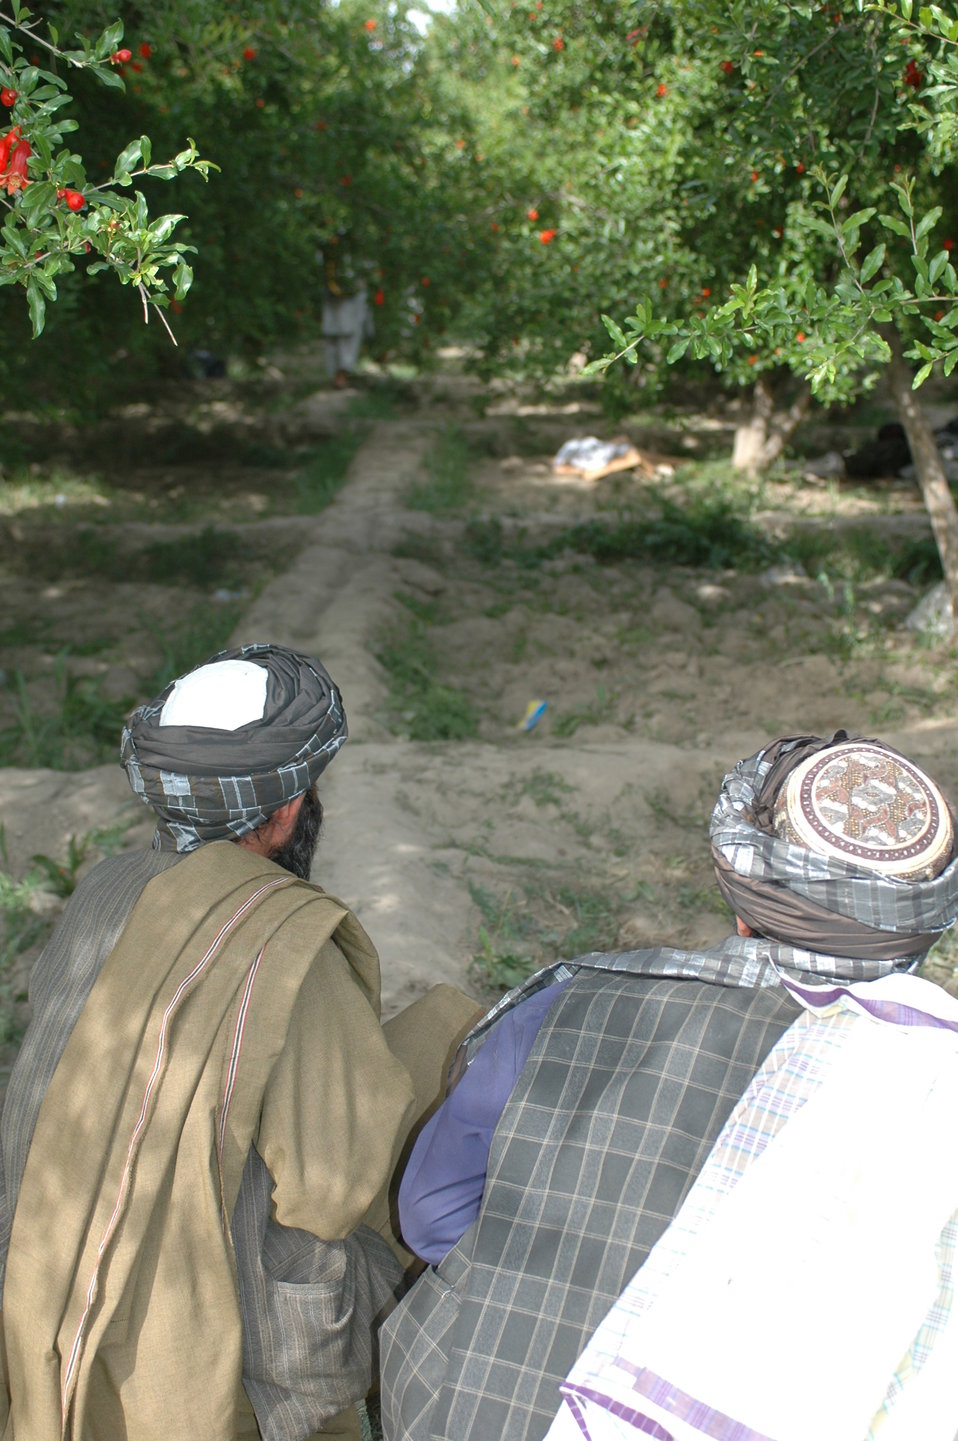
Dr Shah Visits Argandab April 10, 2010